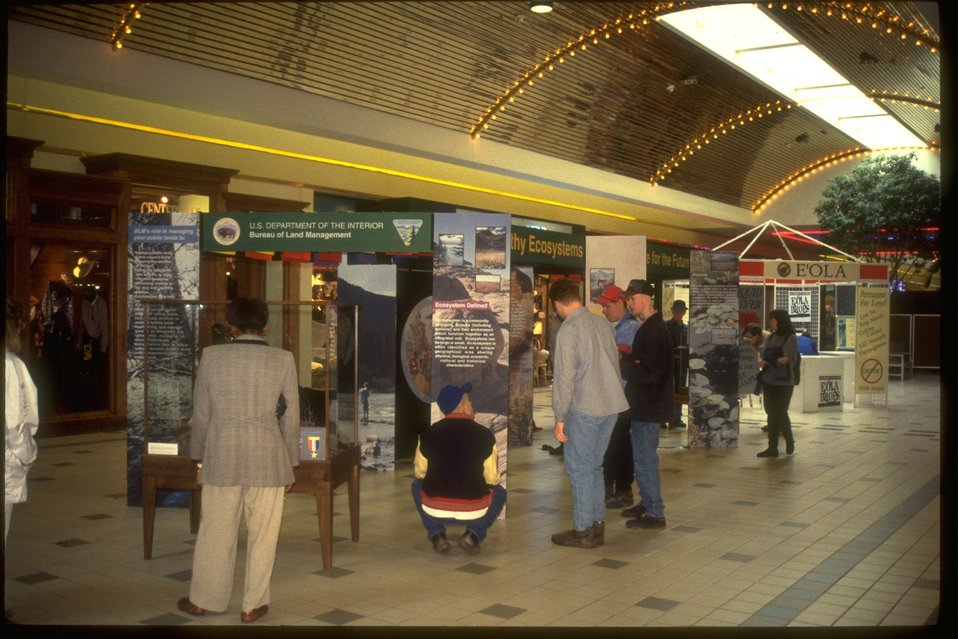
Exhibit at Gateway Mall.